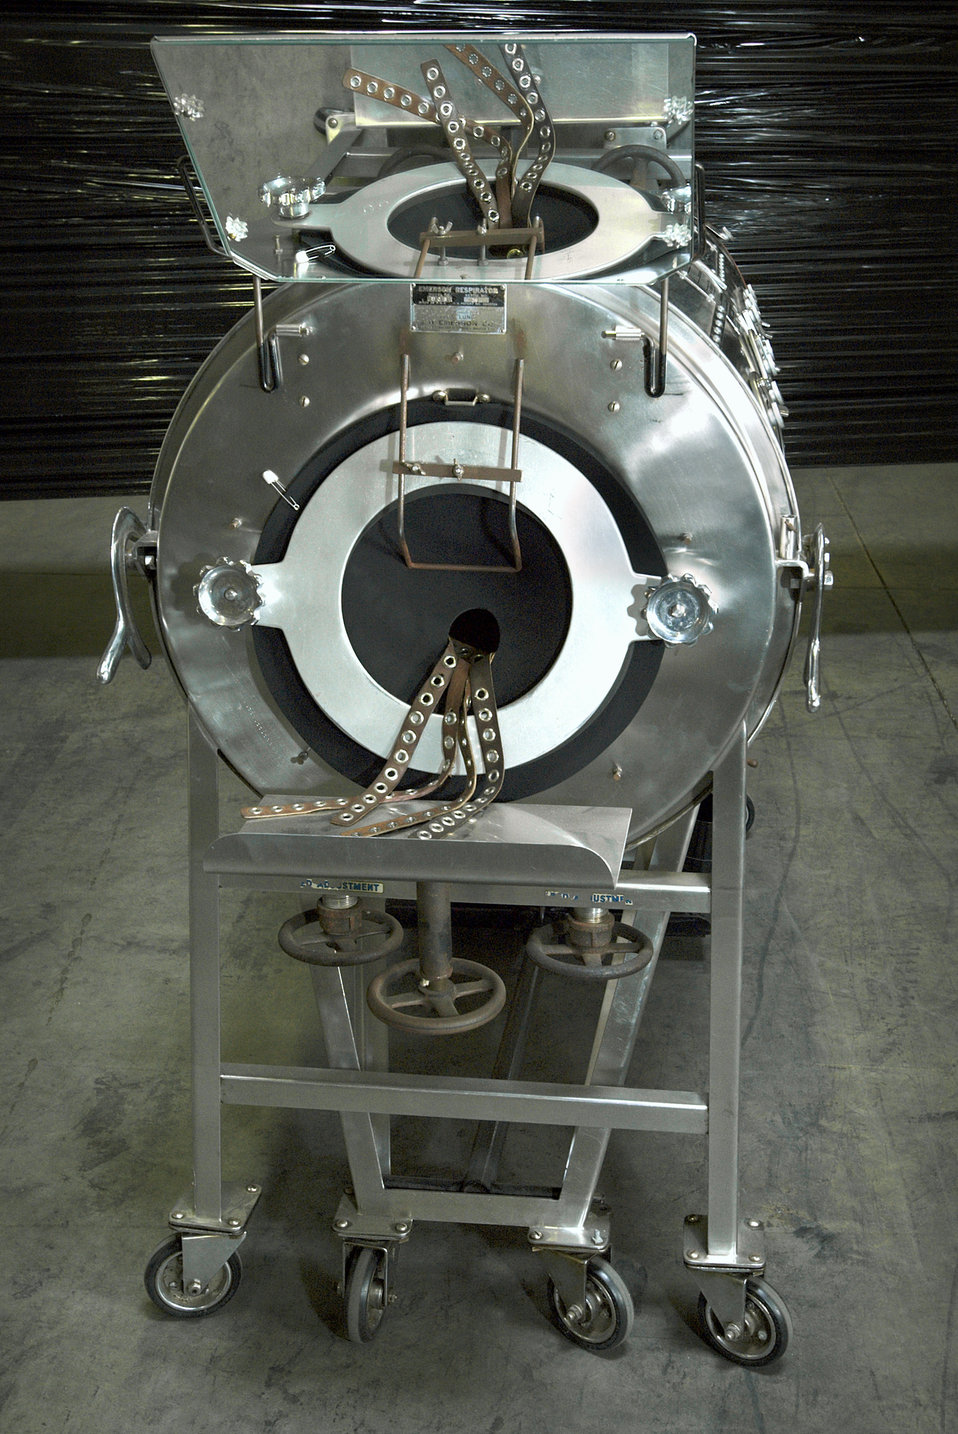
Known as an 'iron lung,' Emerson respirators, like the one shown here, saved countless lives during the polio epidemic using External Negative Pressure Ventilation (ENPV).